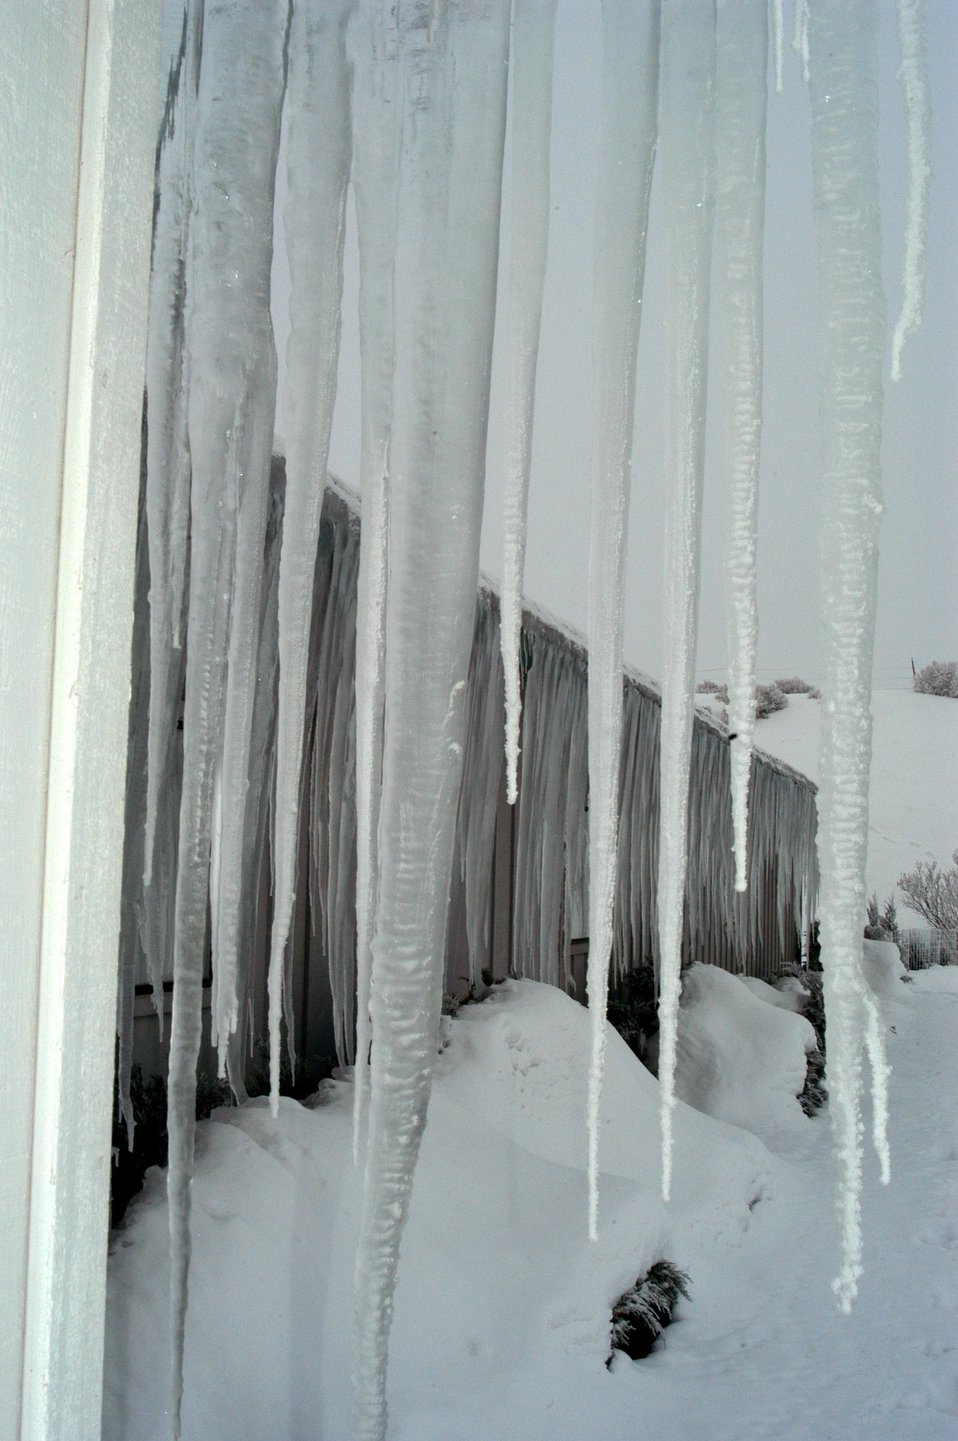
Burns District Office in Hines, Oregon January 22, 2004. Depicts snow accumulations with alternating thawing and freezing temperatures that created icicles over a two week period.